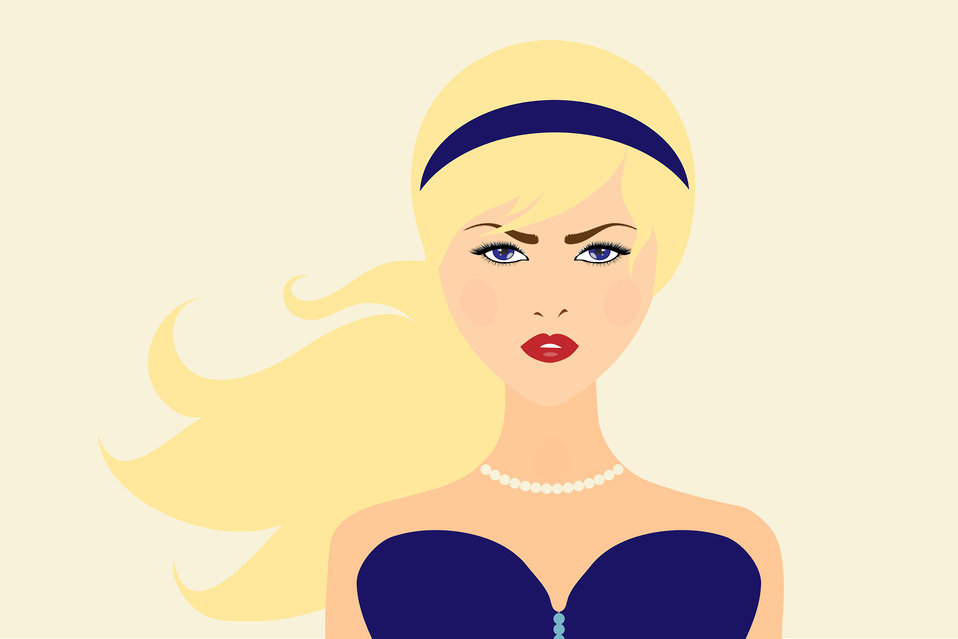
Beautiful girl blonde hair

Beautiful young woman with long blonde hair for scrapbooking.